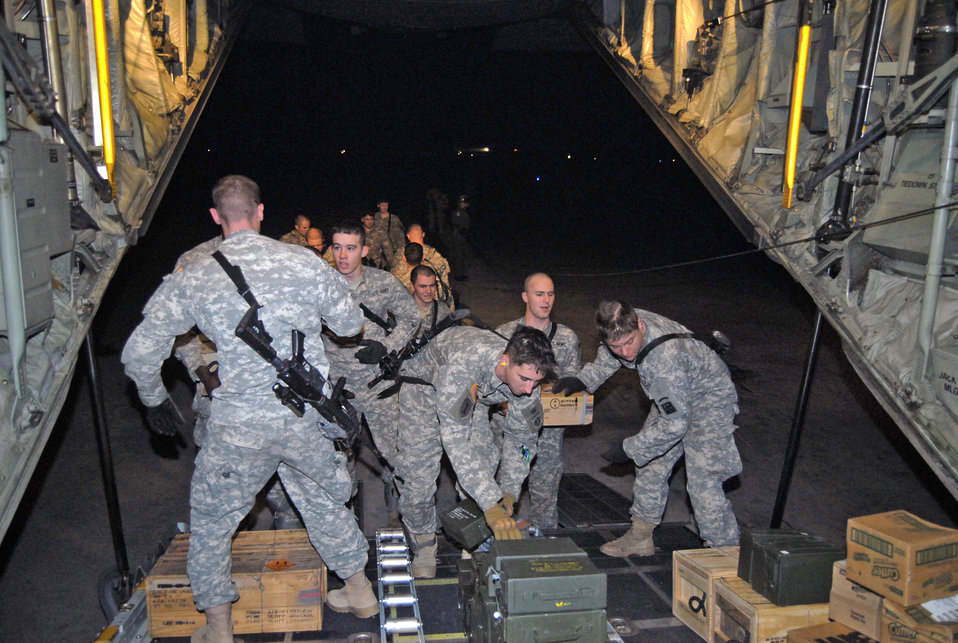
Pope, Bragg provide key step in Haiti humanitarian relief

Members of the 82nd Airborne Division, Fort Bragg unload ammunition and supplies from a C-130 Hercules, Jan. 14, 2010 at Pope Air Force Base, N.C. The Soldiers are being transported by 440th Airlift Wing Airmen to support humanitarian relief efforts and provide essential airfield security after a 7.0-magnitude earthquake devastated the Caribbean nation Jan 12, 2010. The efforts of the mission personnel will ensure the safety of future relief operations.